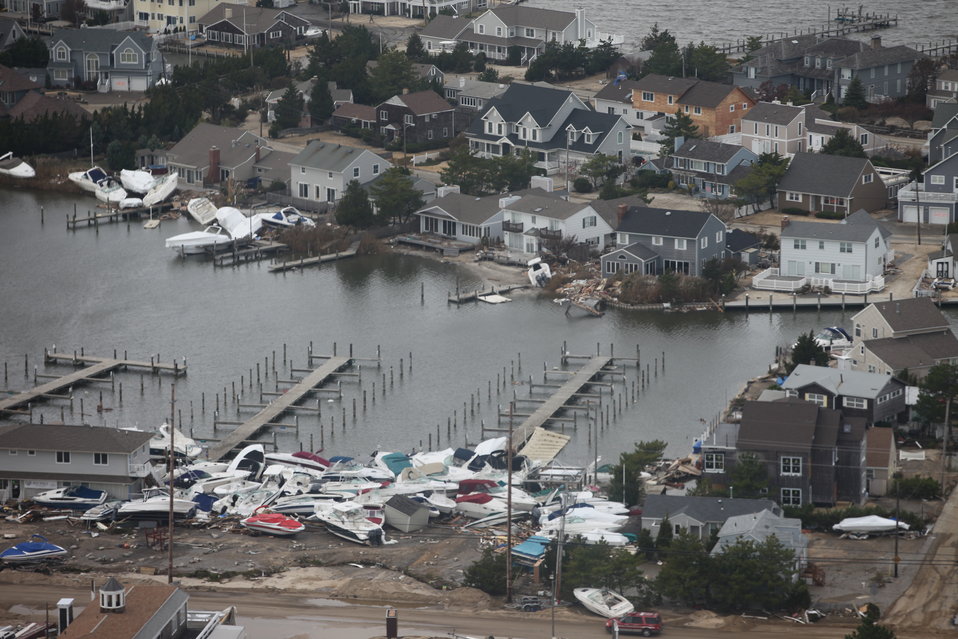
Storm damage at New Jersey marina

Aerial photo of marina on Jersey shoe after Hurrican Sandy.